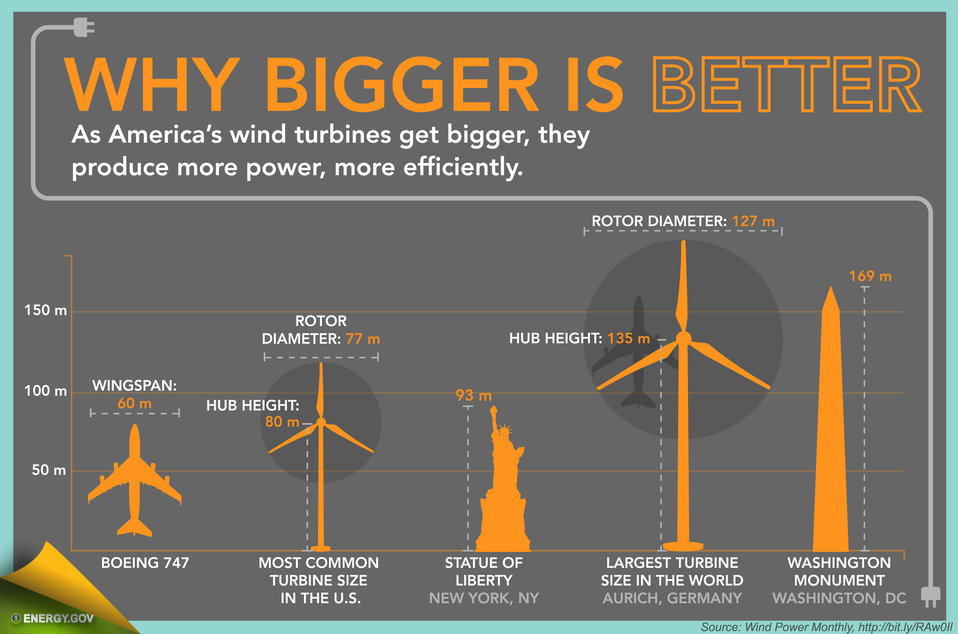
Wind Energy in America - Slide 3